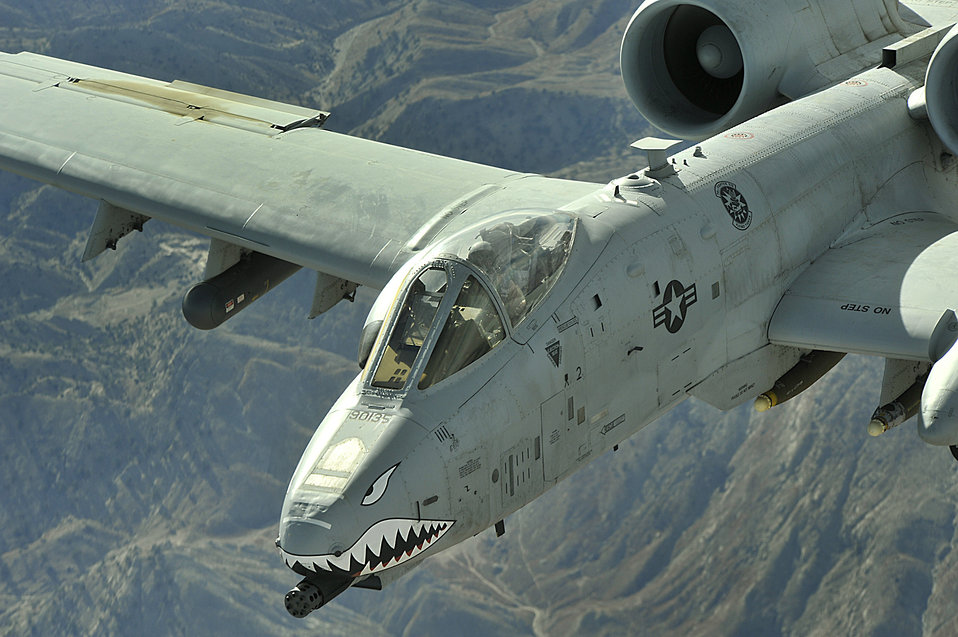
Airpower summary: A-10 provides armed overwatch

A-10 Thunderbolt IIs provide close-air support to ground troops in Afghanistan and Iraq. The A-10's excellent maneuverability at low air speeds and altitude and its highly accurate weapons delivery make it an ideal aircraft for supporting coalition operations.